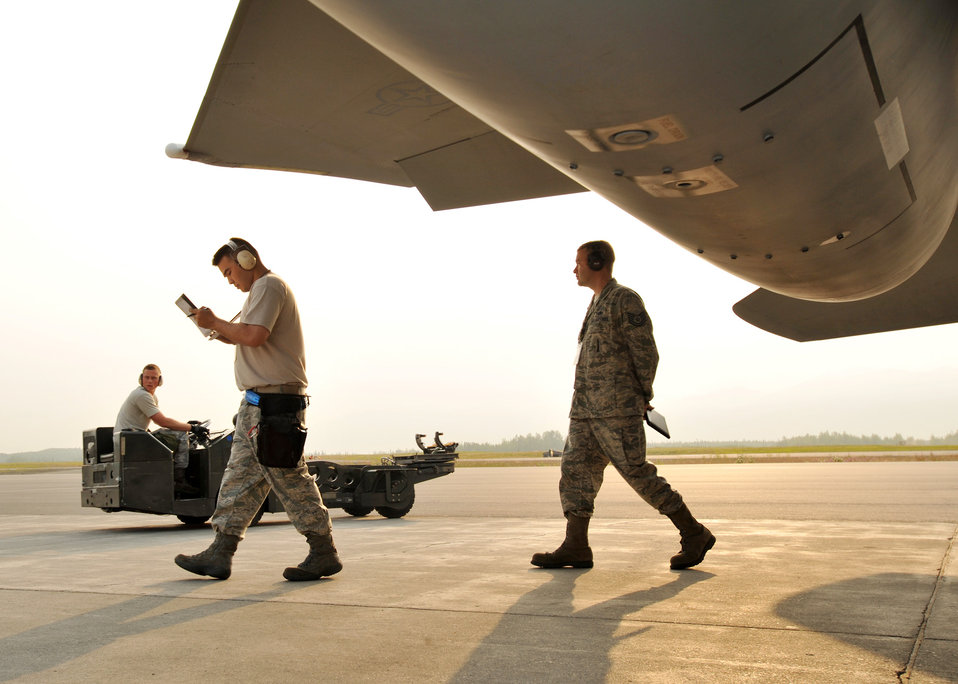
Alaskan load crews compete

Staff Sgt. Kevin Cucuzza, 3rd Aircraft Maintenance Squadron, goes through a checklist followed by evaluator Tech. Sgt. Jody Cooper, 3rd Maintenance Operations Squadron, during a load crew competition July 10 at Elmendorf Air Force Base, Alaska